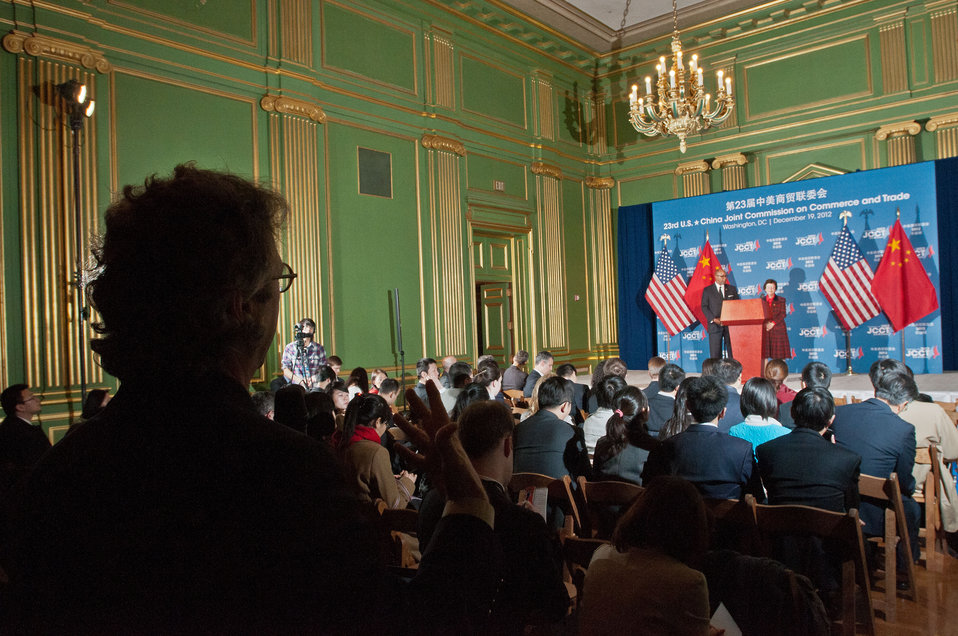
Reuters journalist Doug Palmer, left, presents a question to U.S. Trade Representative Ron Kirk, left, and Acting U. S. Commerce Secretary Rebecca Blank at the 23rd Session of the U.S. China Joint Commission on Commerce and Trade (JCCT) press conference, in the Andrew W. Mellon Auditorium, Wednesday, December 19, 2012, in Washington, D.C.

The JCCT holds high-level plenary meetings on an annual basis to review progress made by working groups that focus on a wide variety of trade issues. These working groups meet throughout the year to address topics such as intellectual property rights, agriculture, pharmaceuticals and medical devices, information technology, tourism, commercial law, environment, and statistics.

Established in 1983, the JCCT is the main forum for addressing bilateral trade issues and promoting commercial opportunities between the United States and China. The2011 JCCT meeting was held in Chengdu, China, where China agreed, among other issues, to improve intellectual property enforcement, delink innovation policies to government procurement preferences, and provide a fair and level playing field in China’s Strategic Emerging Industries.